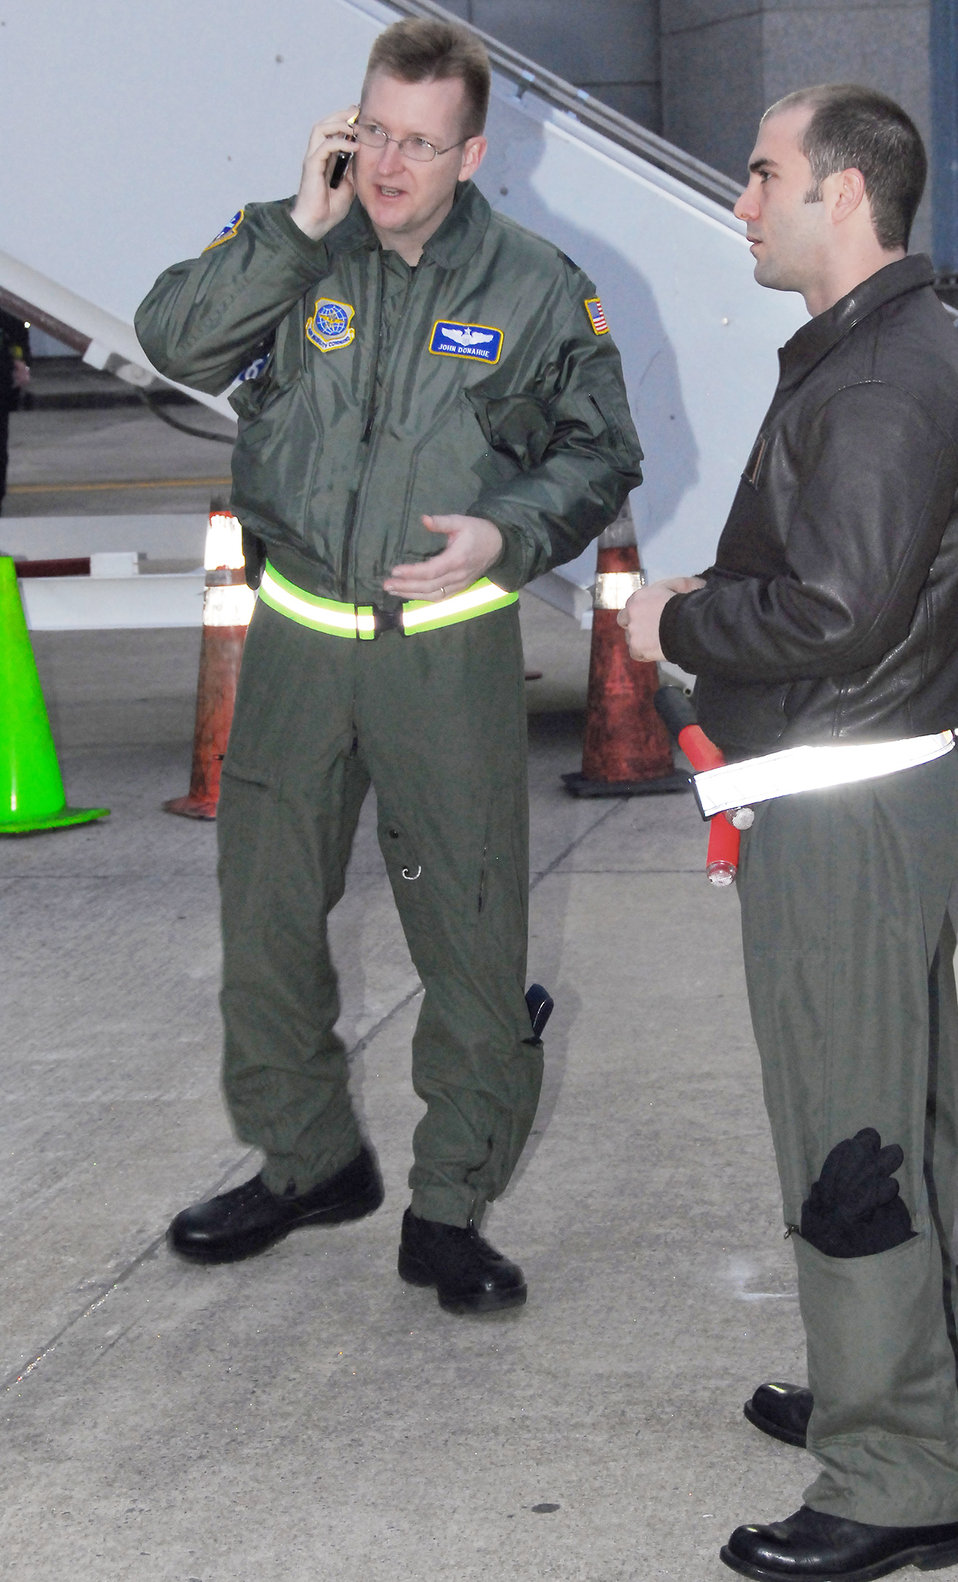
Charleston Airmen serve as liaison in Haitian repatriation effort

Lt. Col. John Donahue (left) makes a call shortly before the arrival of a C-17 Globemaster III transporting evacuees from Haiti to Charleston International Airport Feb. 9, 2010, in Charleston, S.C. Evacuee flights began arriving in Charleston Feb. 4, and the flights are currently being tracked by Colonel Donahue and four Air Force officers to provide flight information to civilian authorities in charge of repatriation efforts. Colonel Donahue is the 628th Air Base Wing chief of Wing Plans and was joined by 437th Airlift Wing Deputy Chief of Wing Plans Capt. Tony Mione (right) in greeting the evacuees on the airport parking ramp.